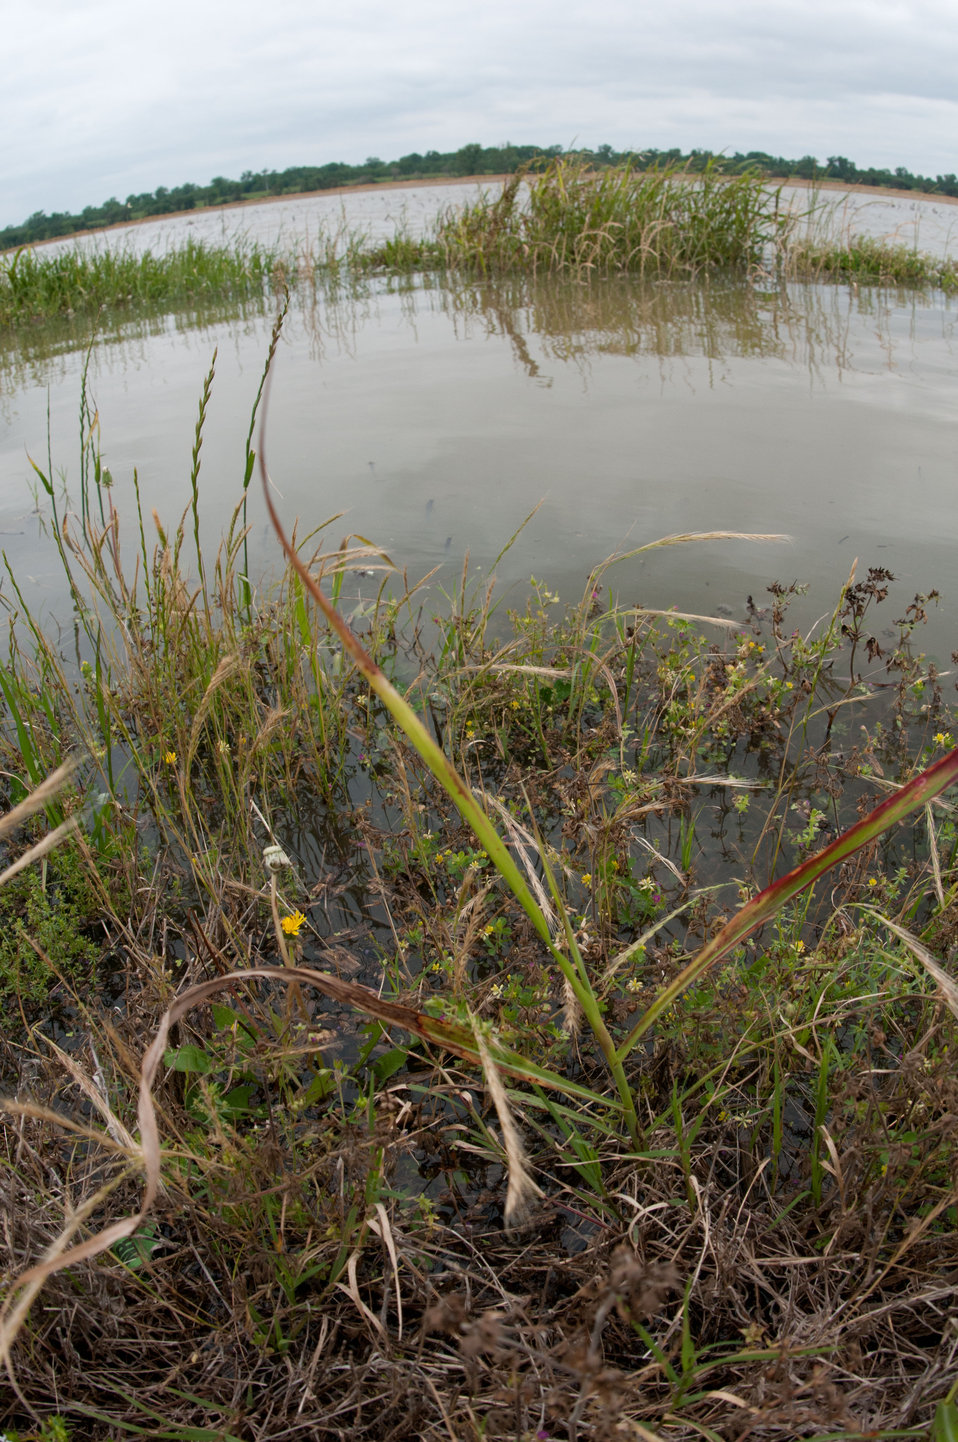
Floods waters from Mississippi River inundated casinos and farms that surround Tunica, MS, on Sunday, May 15. 2011.